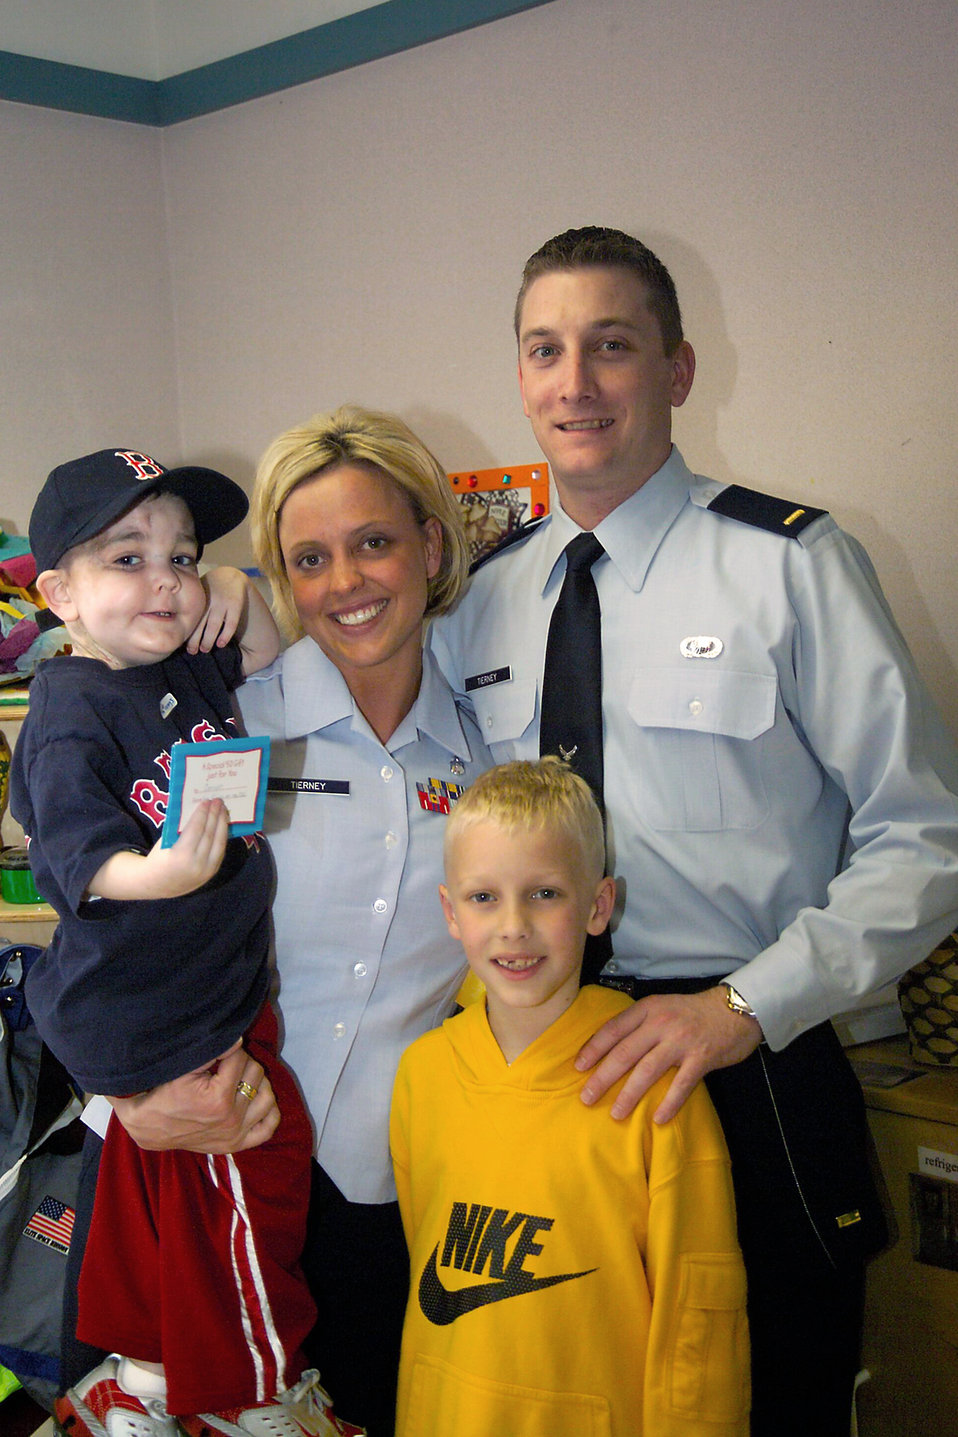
Courage embodied by Hanscom child

HANSCOM AIR FORCE BASE, Mass. -- Four-year-old Connor Tierney, with his parents, Staff Sgt. Jennifer Tierney and 2nd Lt. William Tierney, and his brother, Tyler, 8, was recently diagnosed with a rare lung disease called bronchiolitis obliterans. The disease was caused by treatments for the leukemia he was diagnosed with at 4 months old. Sergeant Tierney is the noncommissioned officer in charge of the 66th Medical Group's preventive dentistry flight here, and Lieutenant Tierney is assigned to the Electronic Systems Center's Joint STARS program office.